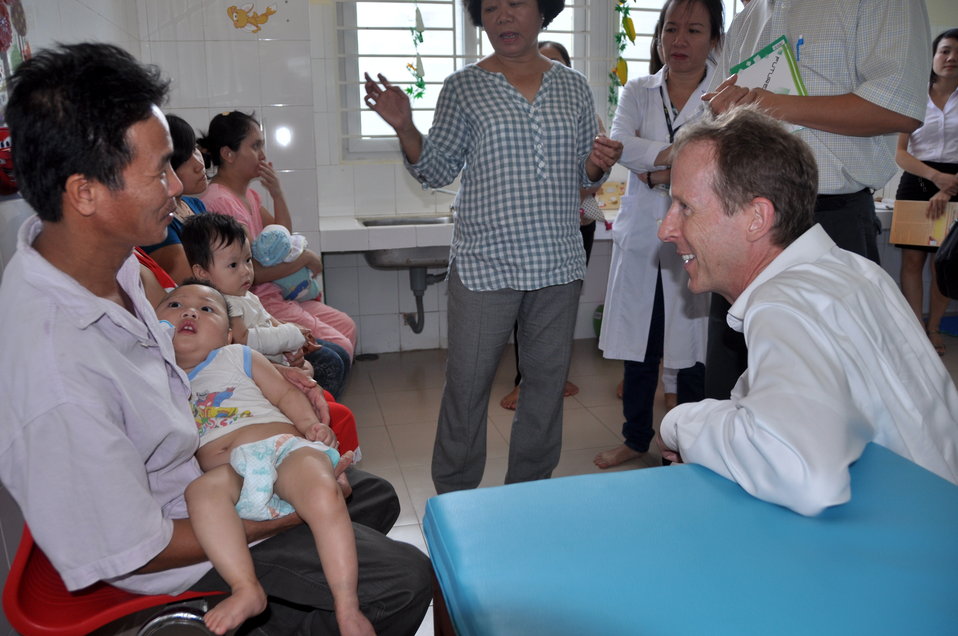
USAID Mission Director Joakim Parker and USAID Partners Join to Open Rehabilitation Department at Women's and Children's Hospital of Danang

July 16, 2013